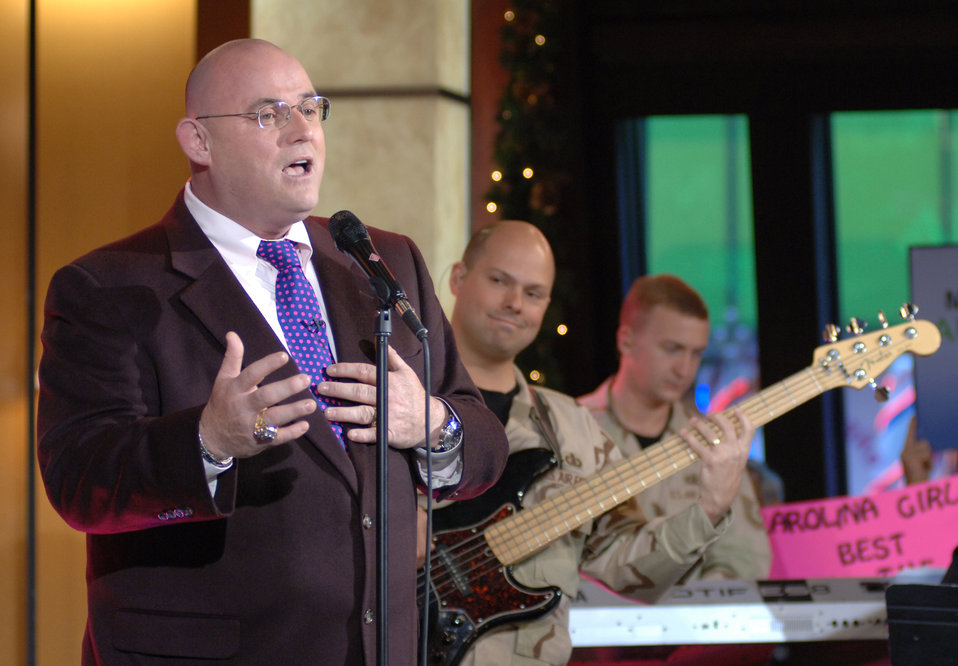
Academy band spreads news in Big Apple

Ronan Tynan, one of the Irish Tenors, sings